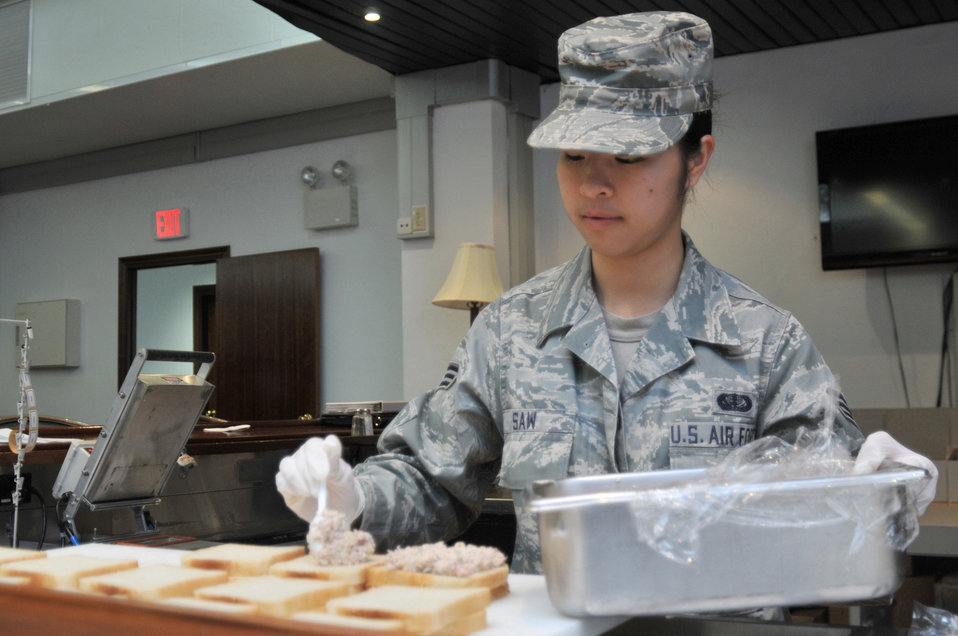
Dining facility Airmen 'beef up' operations to support Operation Odyssey Dawn

Senior Airman Kaythi Saw prepares sandwiches for flight meals March 30, 2011, at Spangdahlem Air Base, Germany, in support of Joint Task Force Odyssey Dawn. Saw is a flight kitchen assistant assigned to Spangdahlem Air Base, Germany.